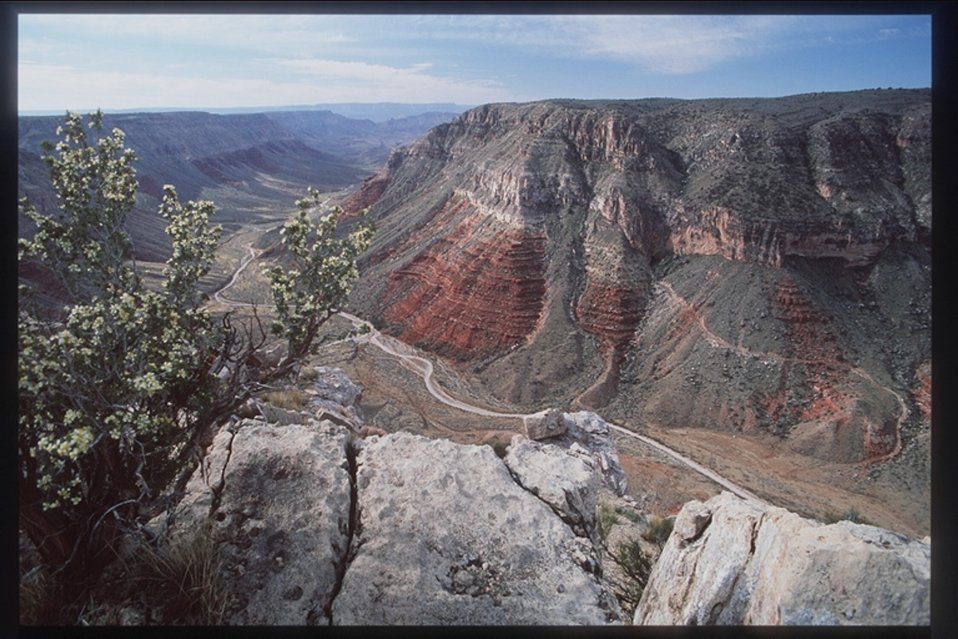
The sheer size of the Grand Canyon is breathtaking.